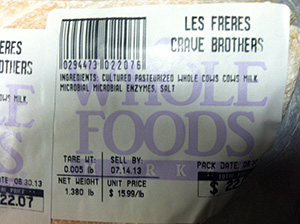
RECALLED – Cheese

July 5, 2013 – Product Recall – Whole Foods Market recalls cheese because of possible health risk.